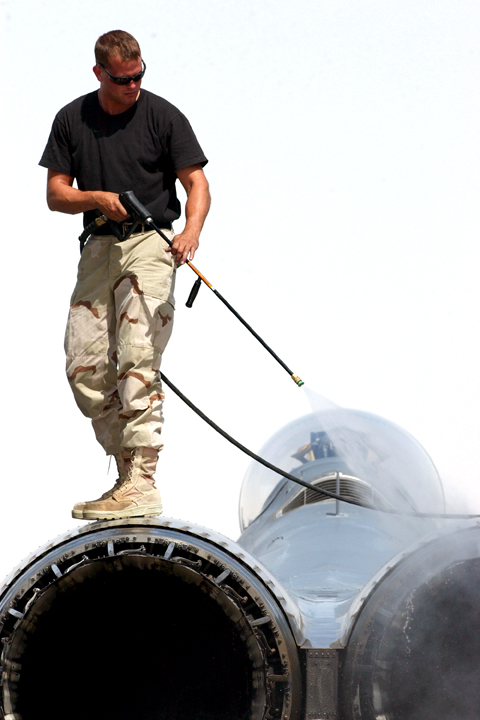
Preening the Eagle

OPERATION IRAQI FREEDOM -- Staff Sgt. Michael Mariner washes down an F-15E Strike Eagle on April 5 to reduce the dust and dirt on the aircraft. Mariner is a crew chief with the 379th Air Expeditionary Wing at a forward-deployed location supporting Operation Iraqi Freedom.